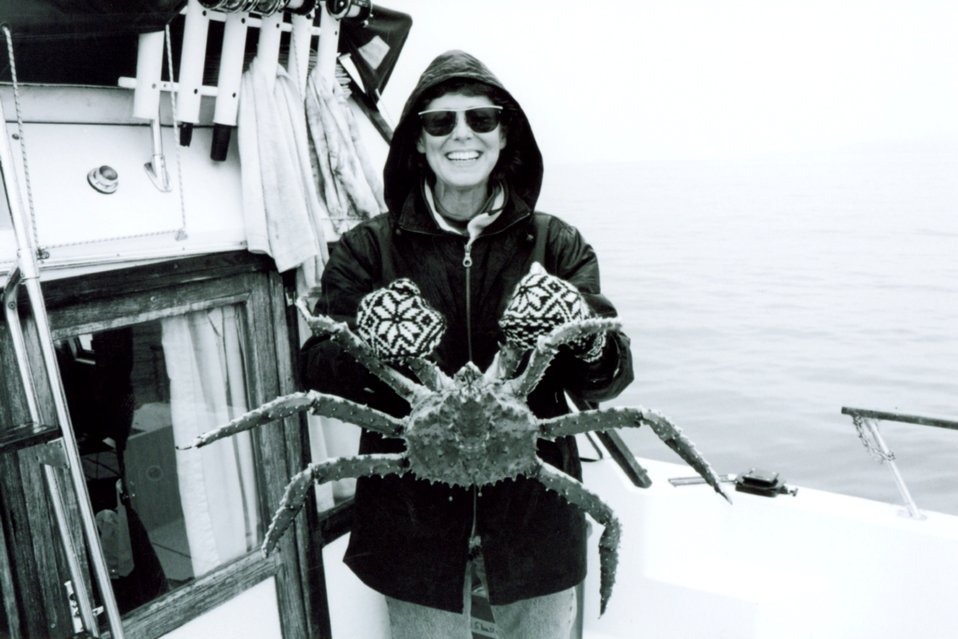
Alaska King Crab